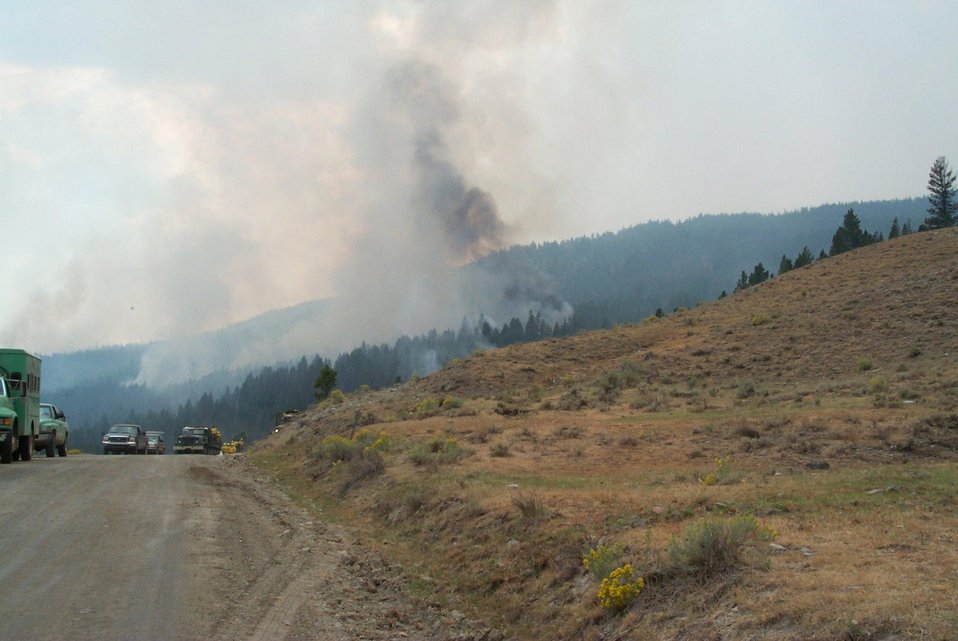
Fire Clearwater Fire Salmon Field Office USRD Upper Snake River District